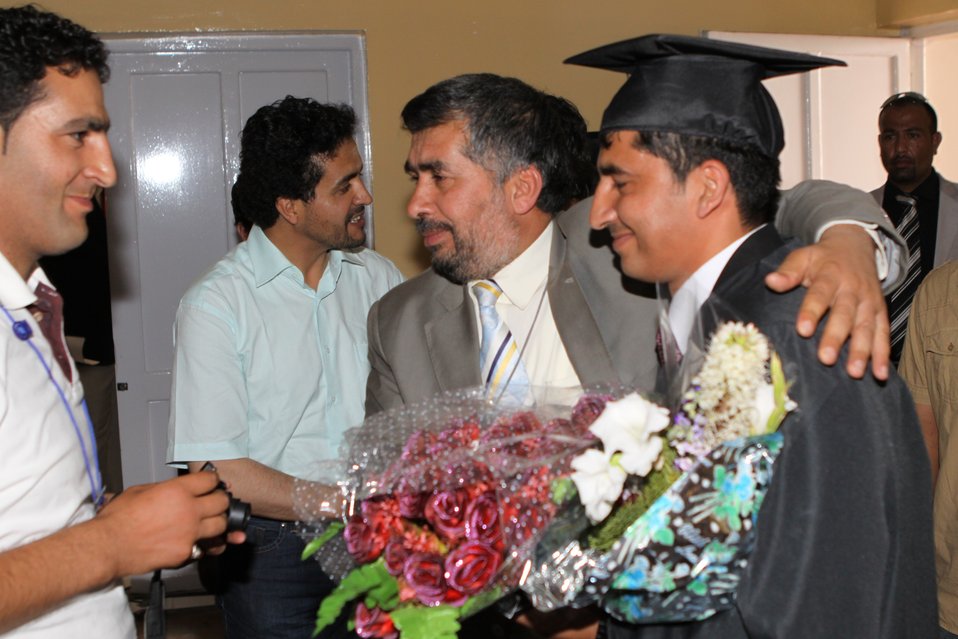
100526 AUAF Graduation 310